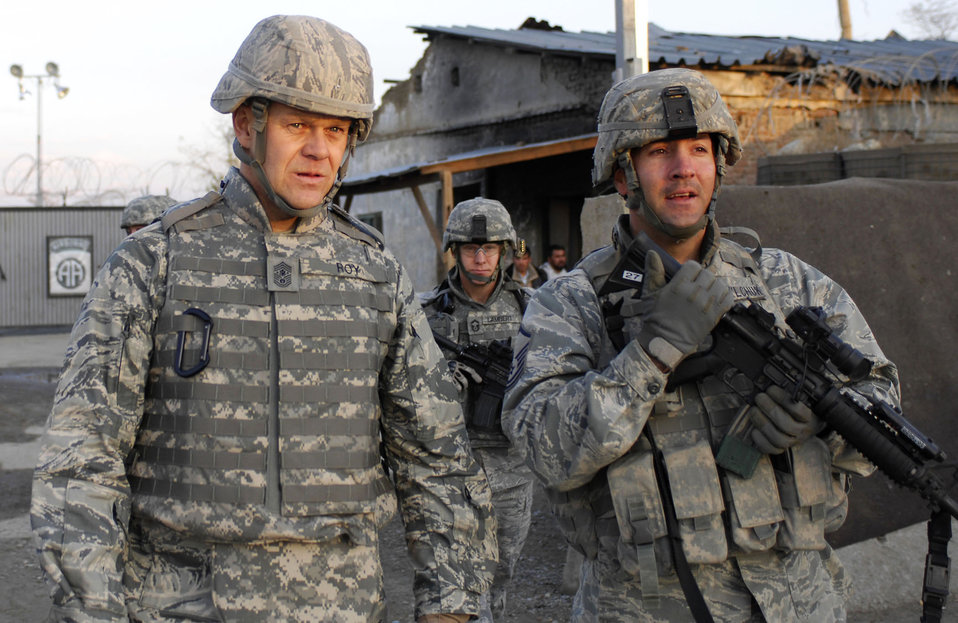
Chief Master Sgt. of the Air Force James A. Roy visits with with Master Sgt. Robert Danylchuck as they view the town outside of one of the entry points Nov. 28, 2009, outside of Bagram Airfield, Afghanistan. Sergeant Danylchuck is the 455th Expeditionary Security Forces Squadron NCO in charge of the Alpha sector and deployed from Davis-Monthan Air Force Base, Ariz.